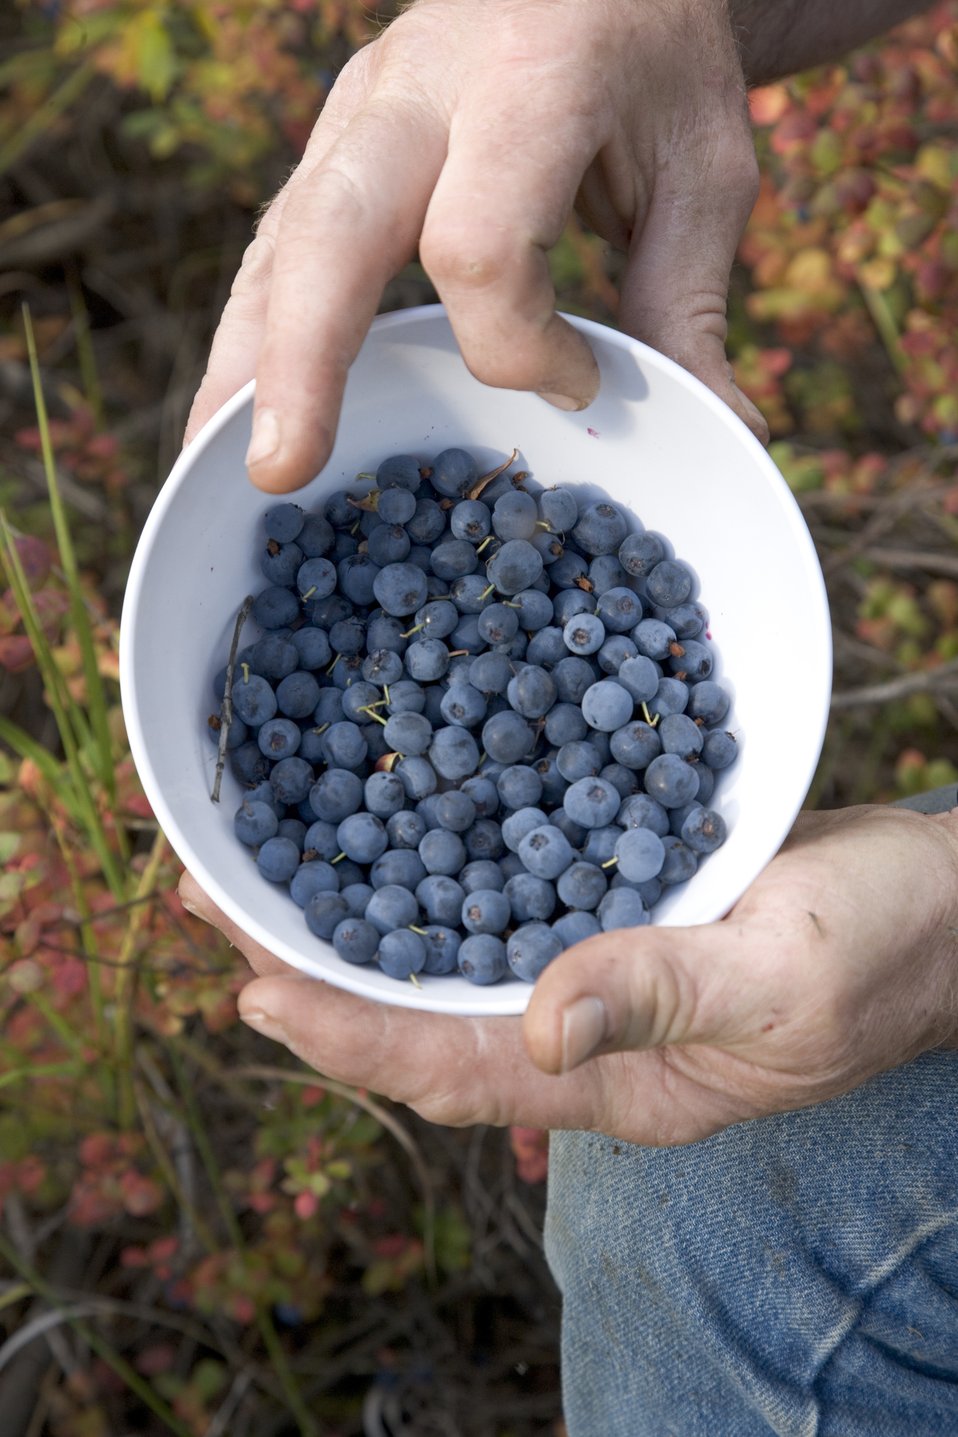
Blueberries

Kanuti National Wildlife Refuge; Recreation; Tourism; Landscapes; Plants; botany; Tundra; Rivers and streams; Scenics